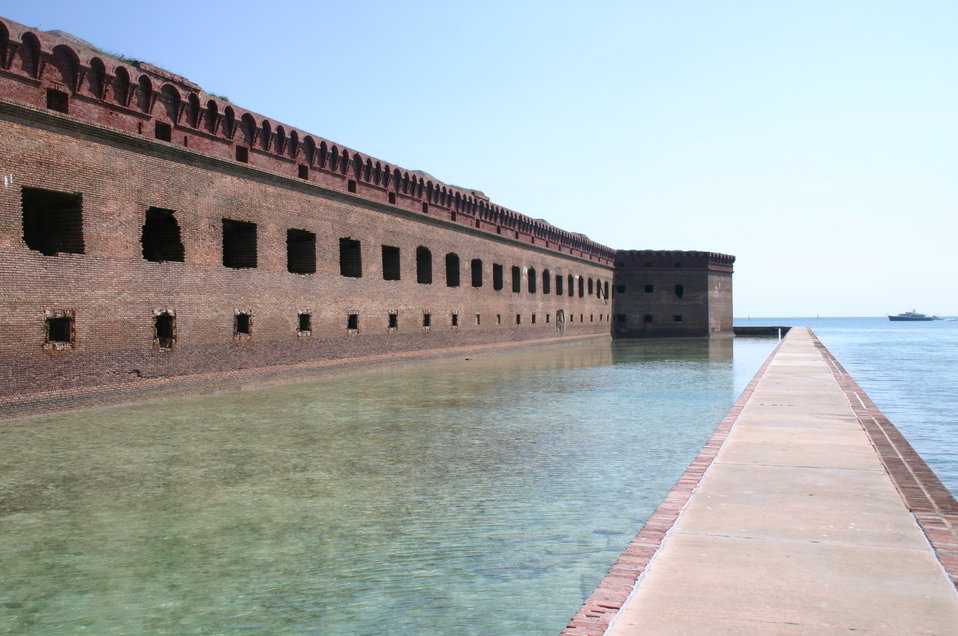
A view of the moat surrounding portions of Fort Jefferson.